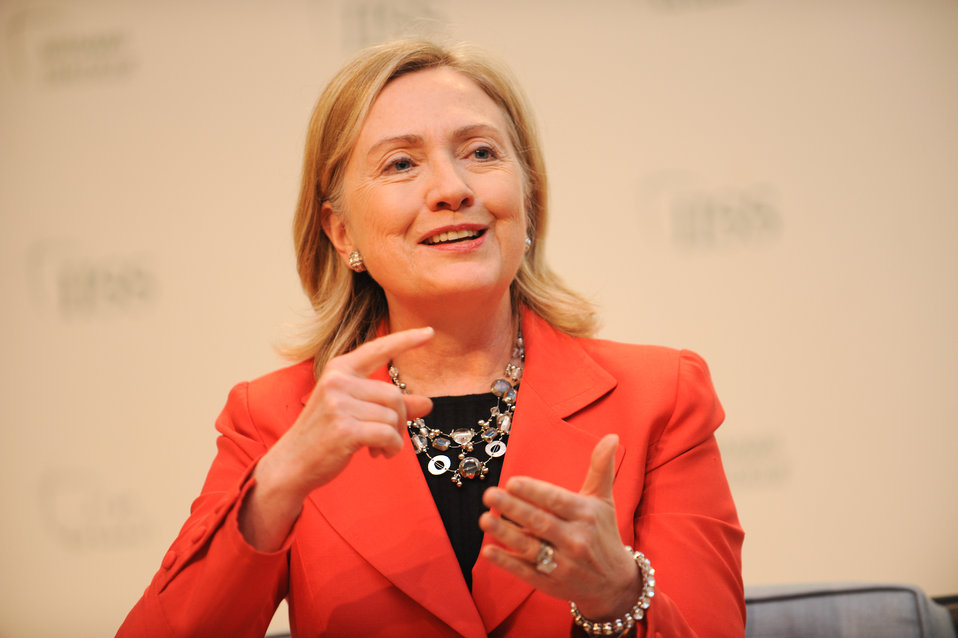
Secretary Clinton Delivers Remarks at the Opening Dinner

U.S. Secretary of State Hillary Rodham Clinton delivers remarks at the opening dinner of the Seventh IISS Regional Security Summit Manama Dialogue in Bahrain, December 4, 2010.